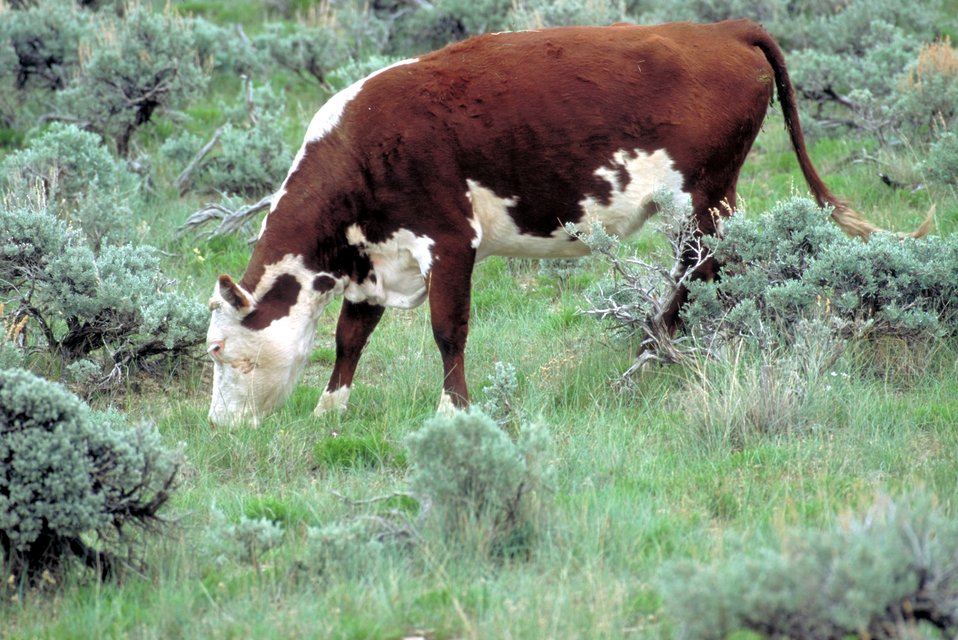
Livestock grazing on BLM lands near Price, Utah.